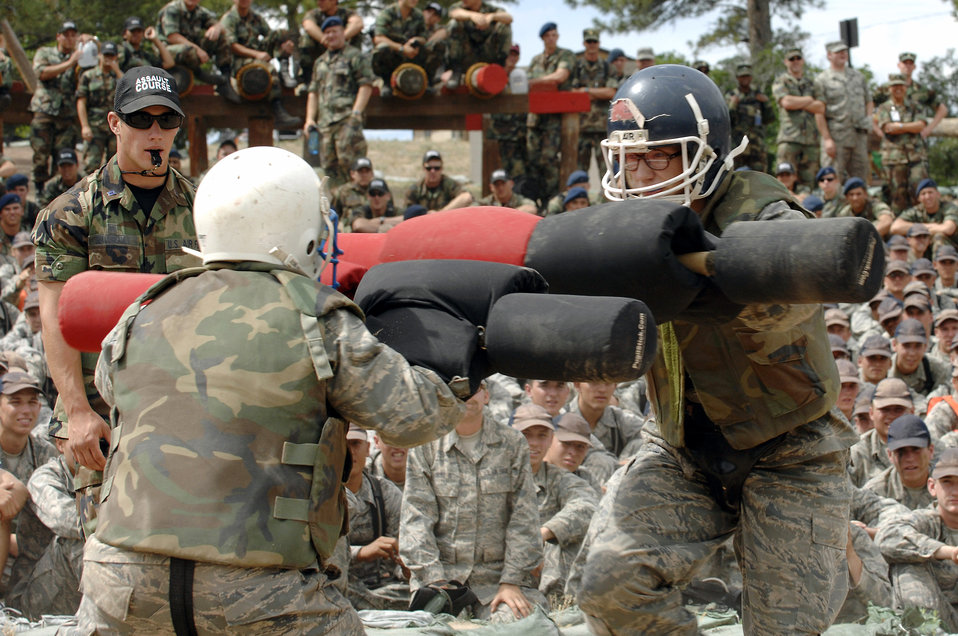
Big Bad Basic

U.S. Air Force Academy basic cadet Bethany Blackburn (right)